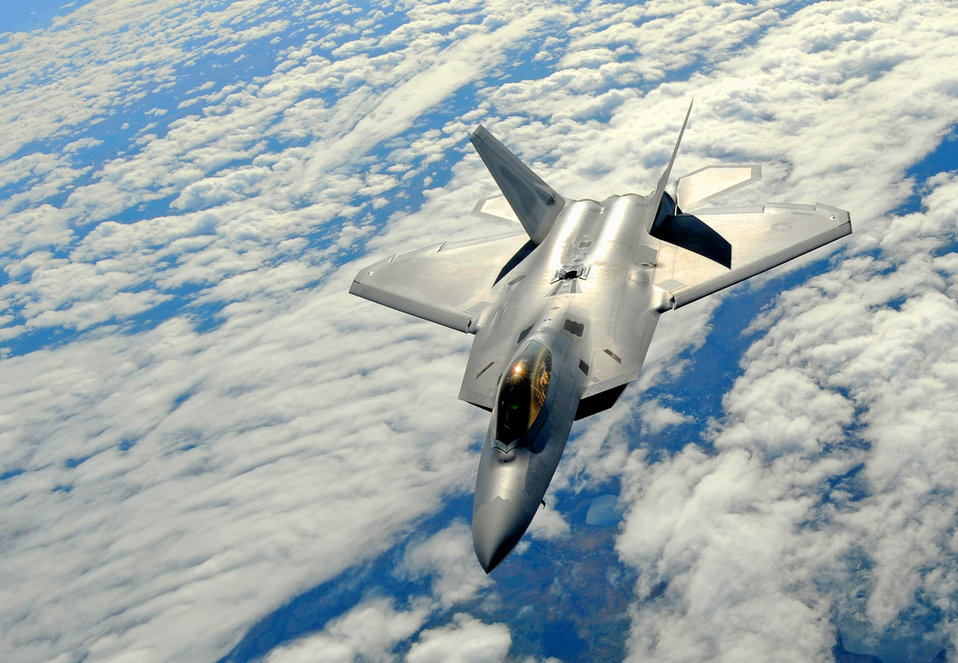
Fighters refuel over Alaska

An F-22 Raptor from Elmendorf Air Force Base, Alaska, drops back after receiving fuel from a KC-135 Stratotanker over Alaska May 26, 2010.